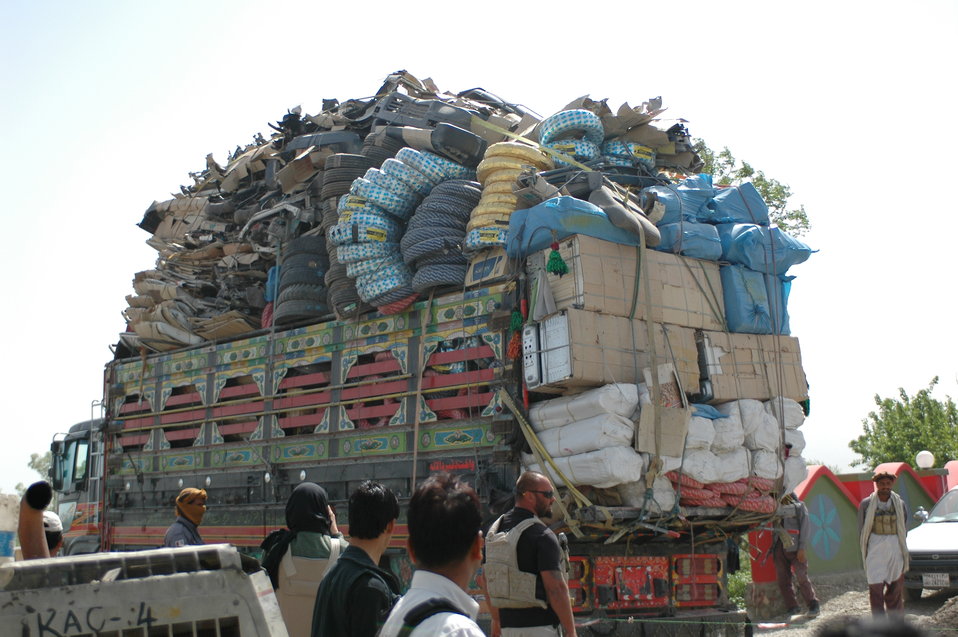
April 28, 2010 - Maximizing Truck Use

A typical scene on the roads from Afghanistan to Pakistan as truckers maximize the loads they carry. This truck is headed to Pakistan through the town of Khost.